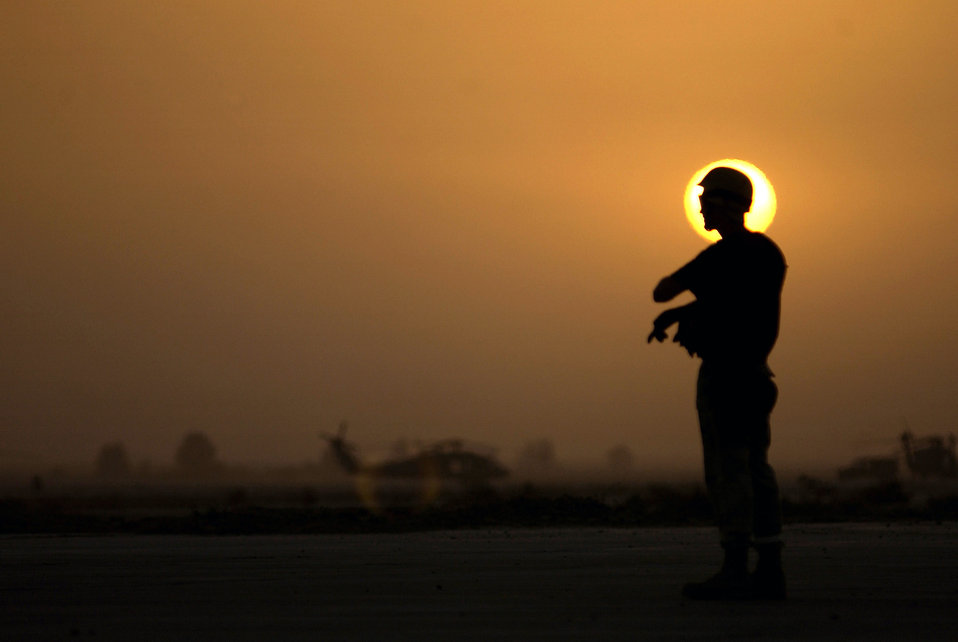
Sunset

OPERATION IRAQI FREEDOM -- A member from the 621st Air Mobility Group Tanker Airlift Control Element waits for a C-130 Hercules to take off April 4 at a forward deployed location in southern Iraq during Operation Iraqi Freedom. C-130s are bringing in cargo for personnel and operations at the base. Operation Iraqi Freedom is the multi-national coalition effort to liberate the Iraqi people, eliminate Iraqi's weapons of mass destruction, and end the regime of Saddam Hussein.